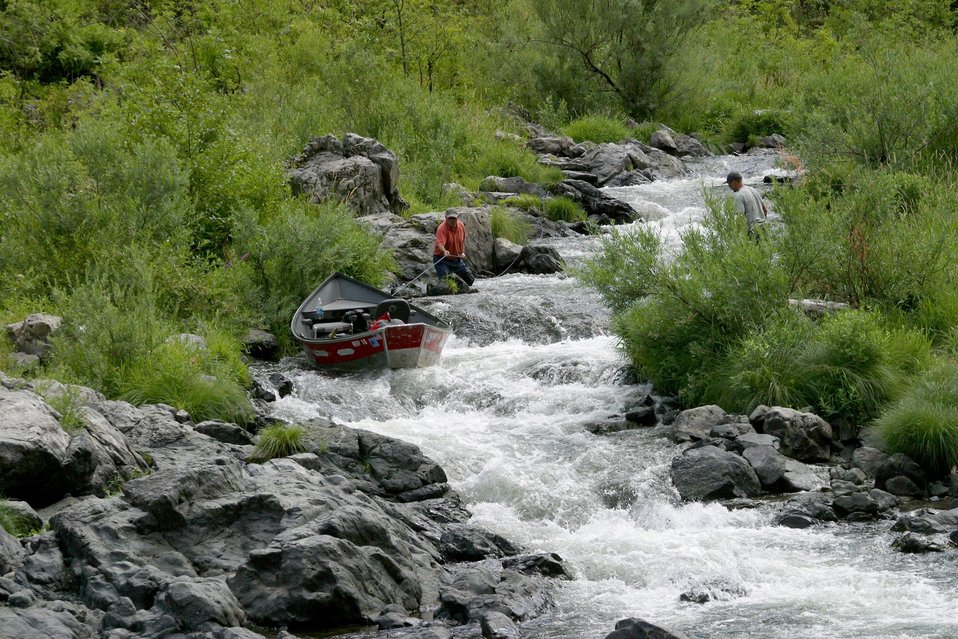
Rainie Falls Fish Ladder